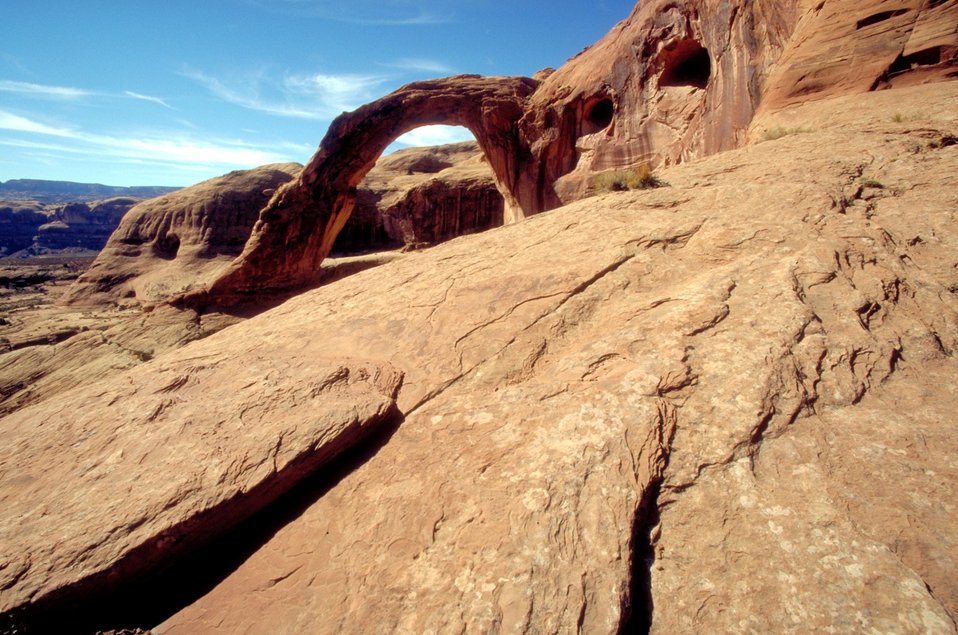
Corona Arch near Moab, Utah.